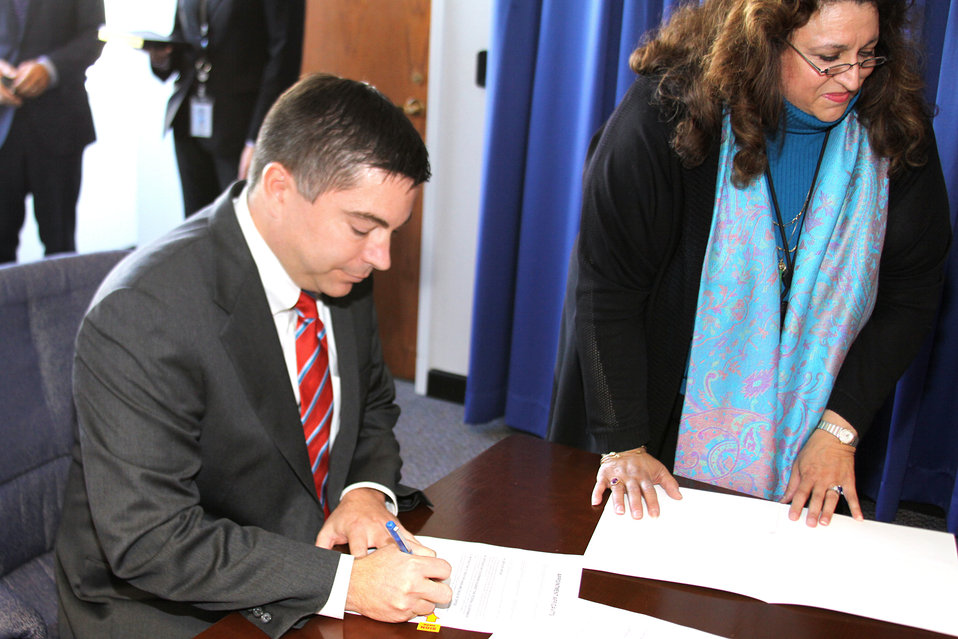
11.4.2013 Commissioner Michael O’Rielly Swearing In Cermony

Commissioner Michael O’Rielly was nominated for a seat on the Federal Communications Commission by President Barack Obama on August 1, 2013 and was confirmed unanimously by the United States Senate on October 29, 2013. He was sworn into office on November 4, 2013.